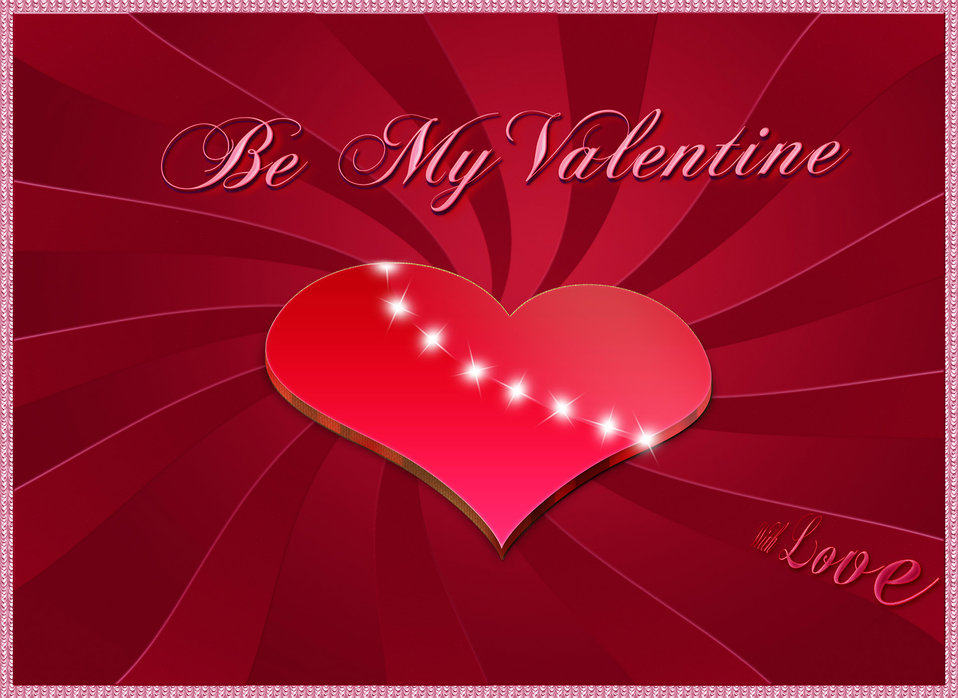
Be my valentine 3 d

Romantic valentine card with red sunburst background.